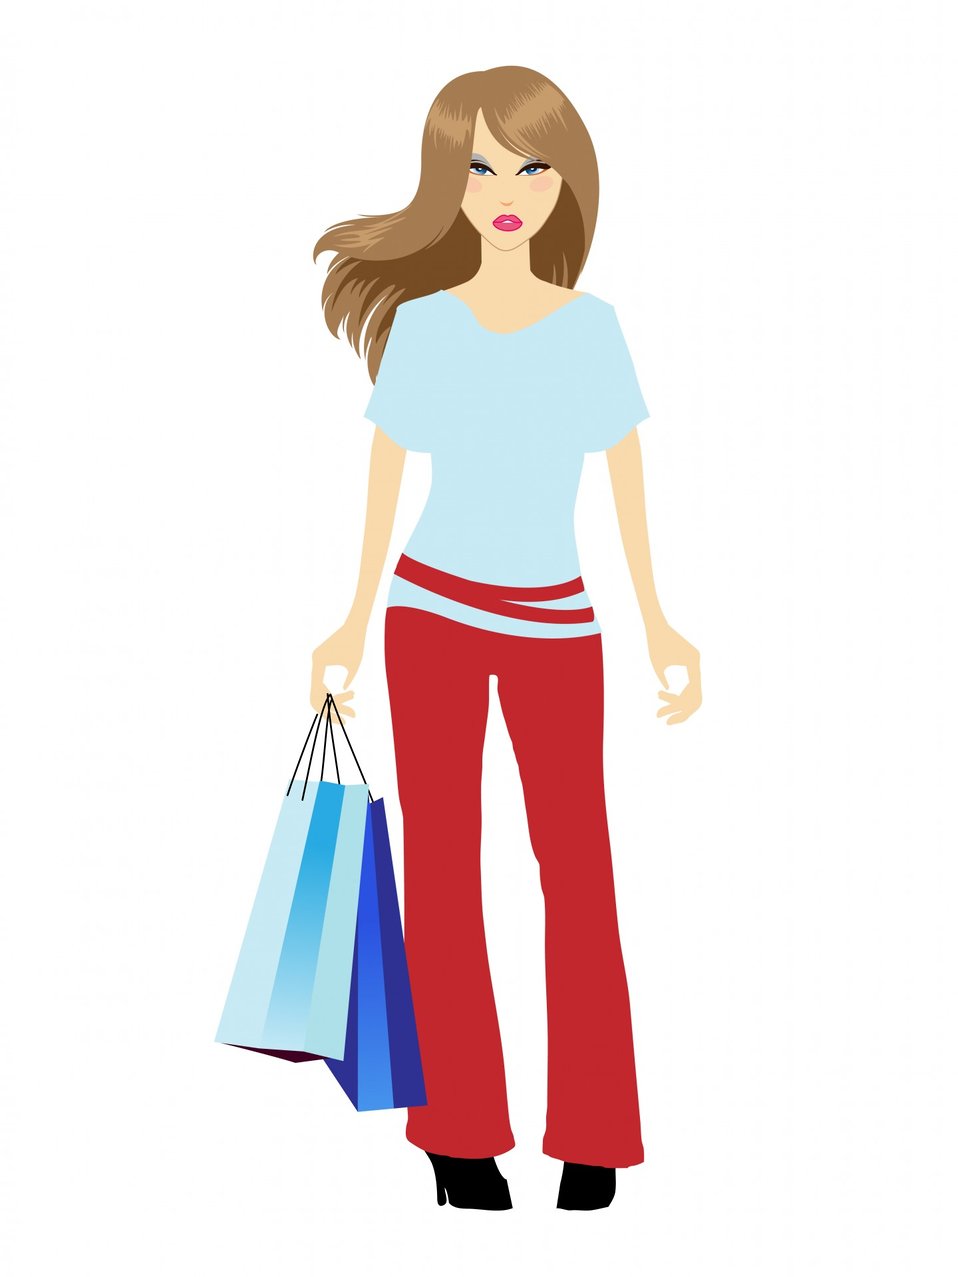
Woman with shopping bags

Young fashionable woman with shopping bags clipart.